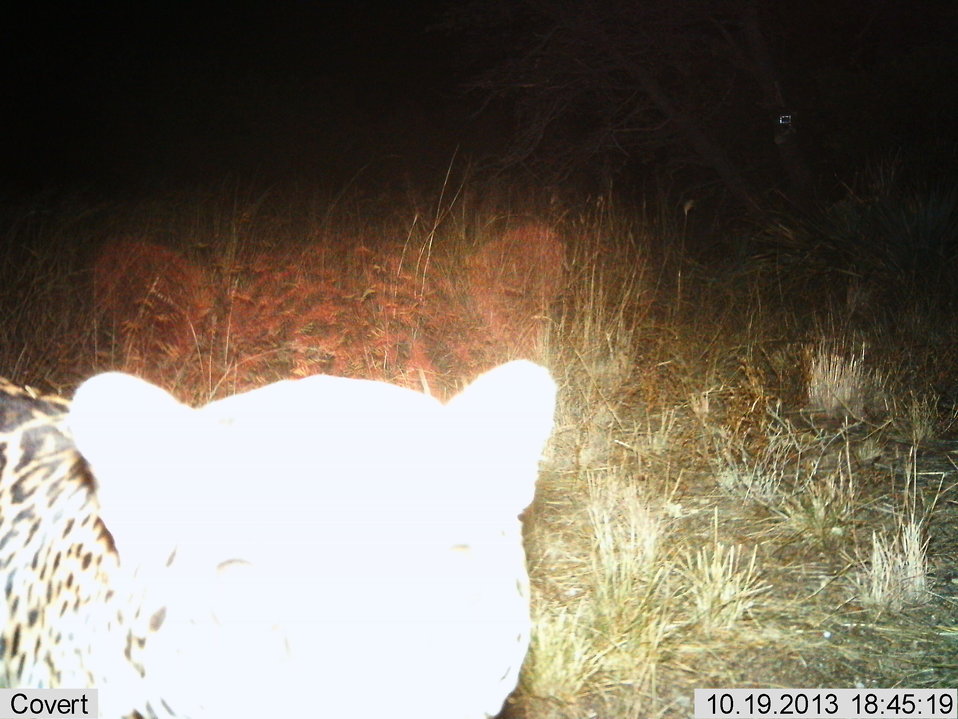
Male jaguar photographed by automatic wildlife cameras in the Santa Rita Mountains on October 19, 2013, as part of a U.S. Fish and Wildlife Service/Department of Homeland Security-funded jaguar survey conducted by University of Arizona. This is the first of three photos from October 19 at this location. The jaguar has been photographed previously at this location.